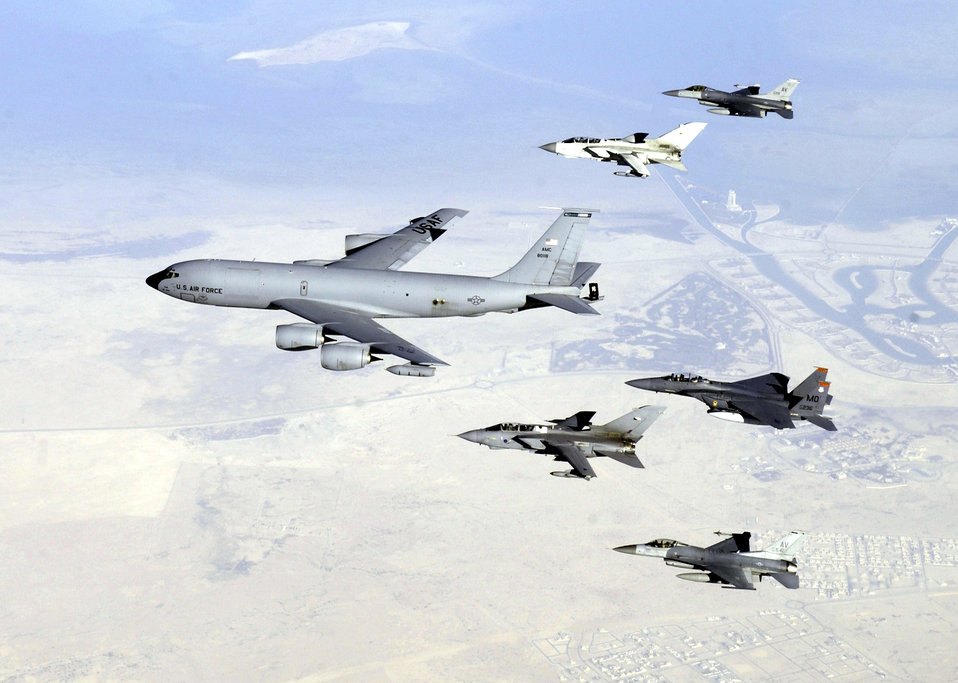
Formation flying

OVER SOUTHWEST ASIA -- A KC-135 Stratotanker leads a formation of an F-15 Strike Eagle, two F-16 Fighting Falcons and two British GR4 Tornados on Dec. 29. The aircraft and crews are supporting operations here.